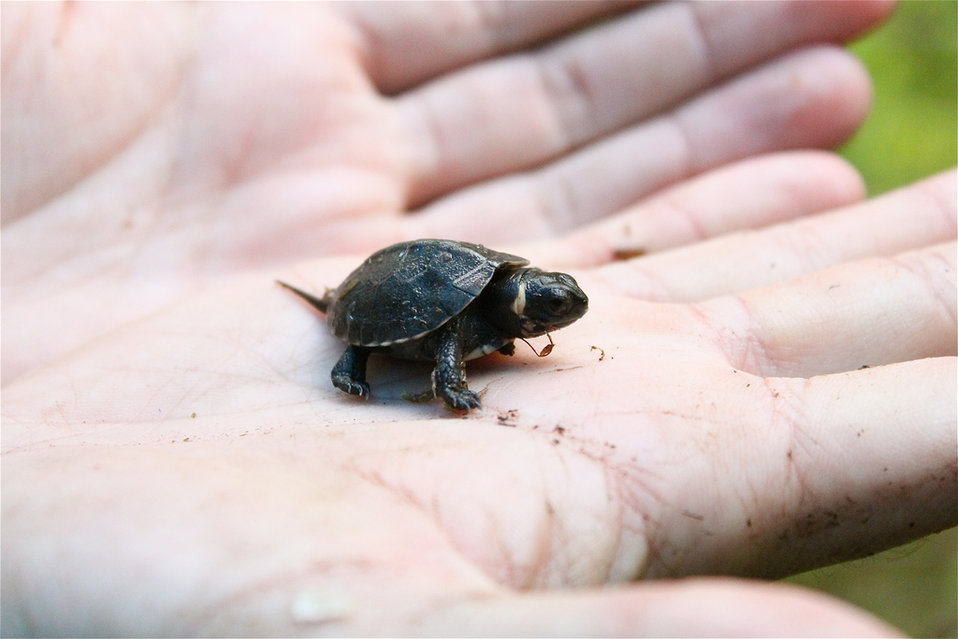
Baby Bog Turtle

Tiny baby bog turtle in palm.